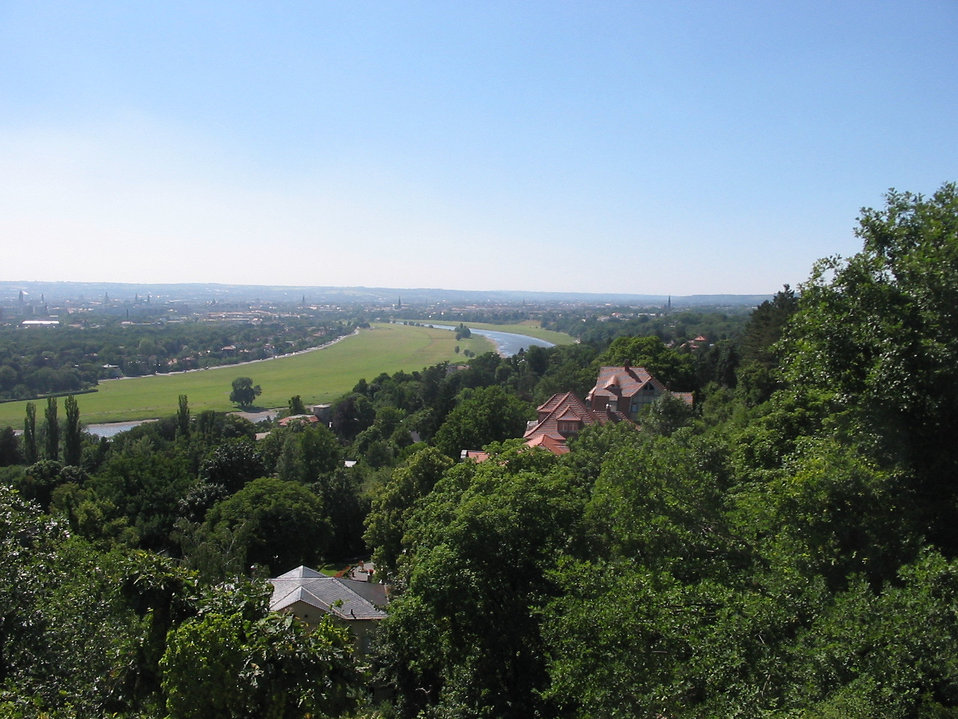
Das Elbtal und Dresden, fotografiert von der Terrasse des 'Luisenhof' in Dresden Weißer Hirsch Deutsch: Blick vom Loschwitzer Elbhang über Dresden Español: Valle del Elba visto desde Luisenhof Svenska: Vy över flodens ängar och Dresden